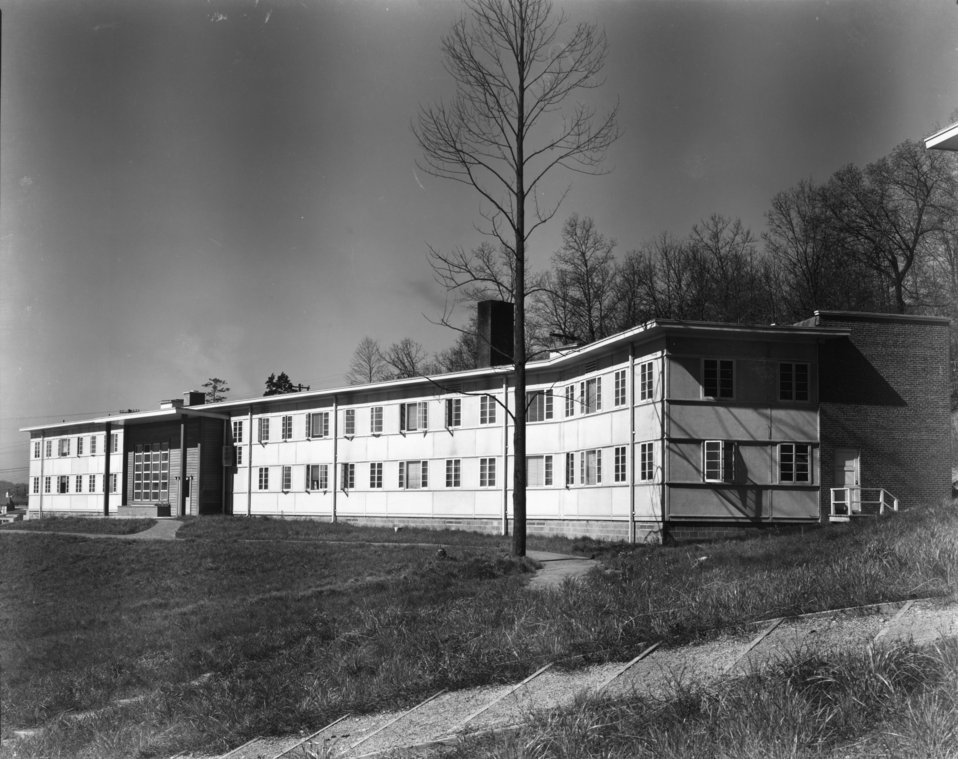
Housing at Oak Ridge